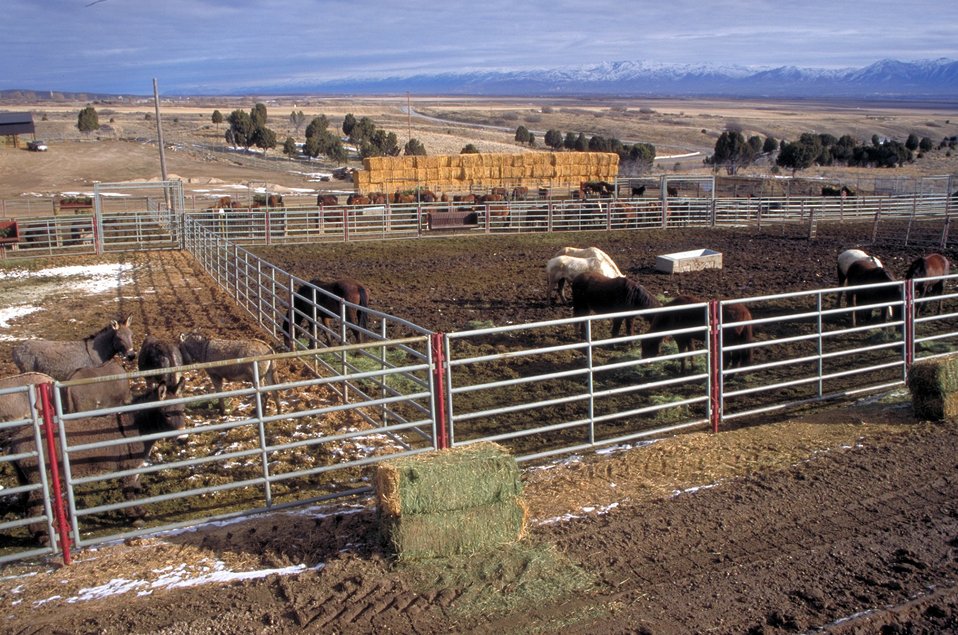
Salt Lake Regional Wild Horse and Burro Center Butterfield Canyon.